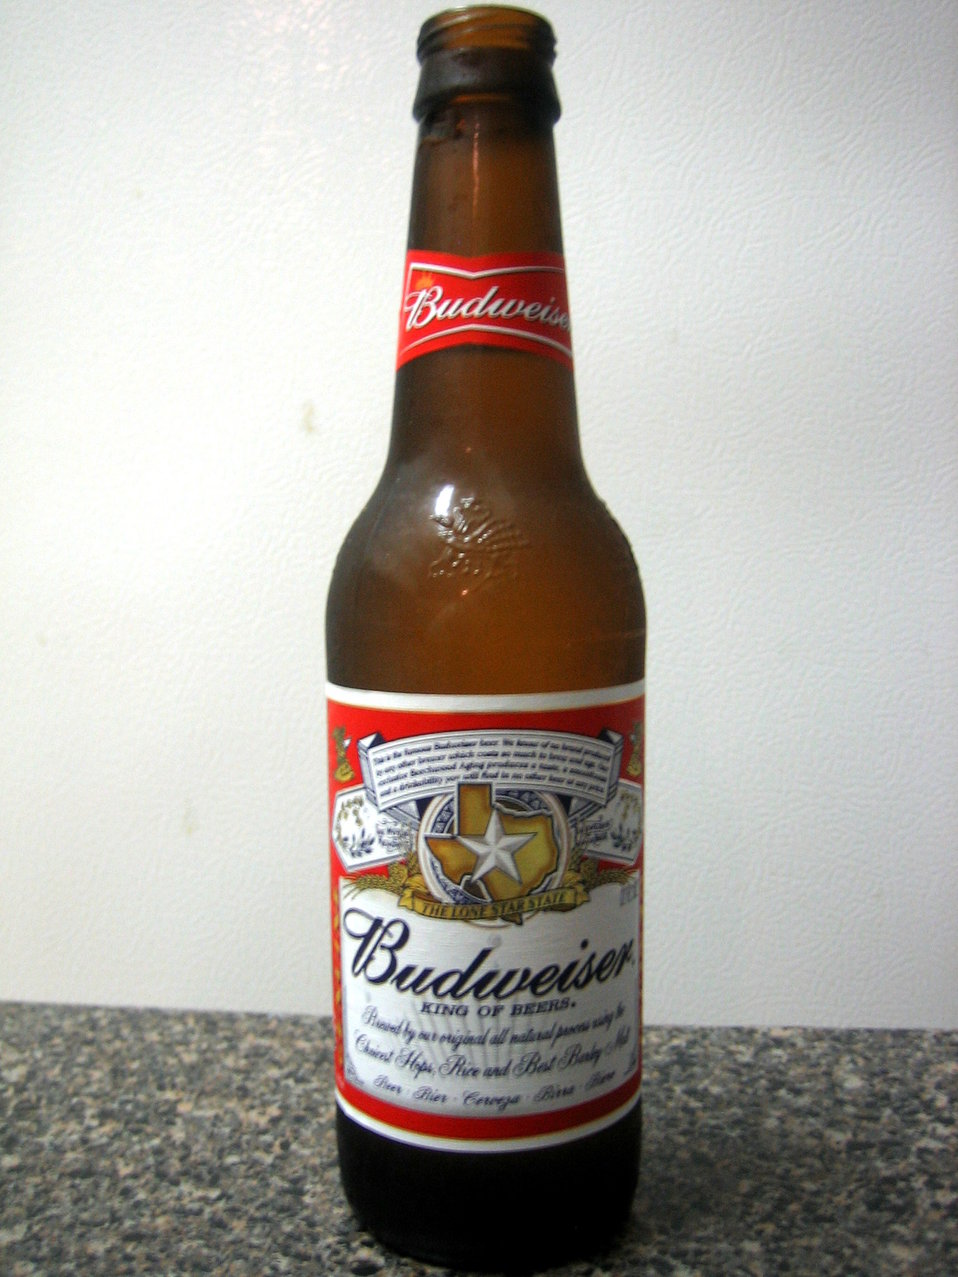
A bottle of Budweiser Español: Una botella de Budweiser